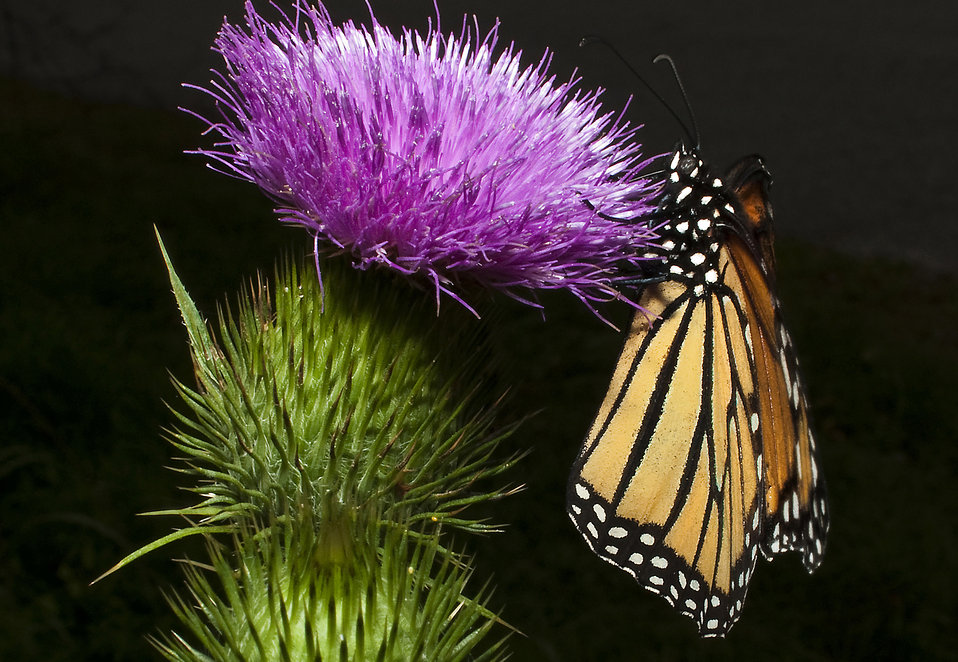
Butterfly on thistle at Brookhaven National Laboratory.